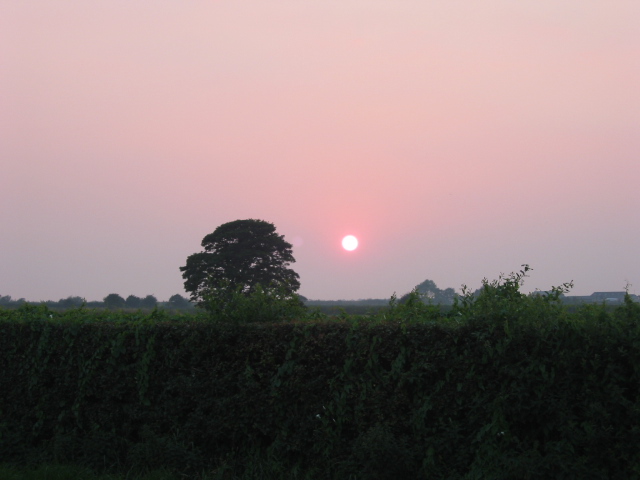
A sunset in Cockerham. Photo taken by Dudesleeper on August 8, 2003.